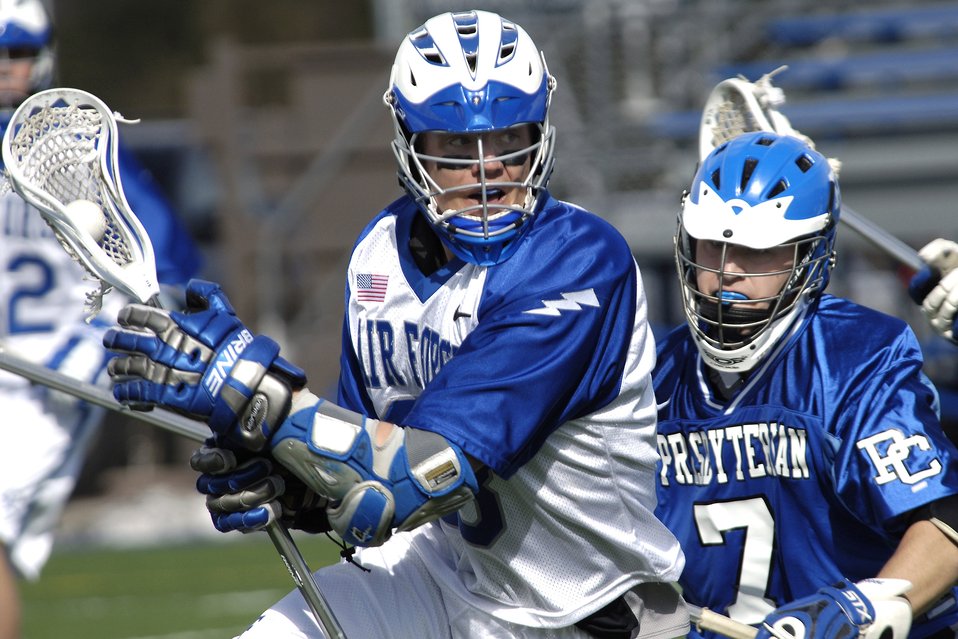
Falcons pick up 12-4 victory over Presbyterian

Air Force Academy senior Jack Parchman works towards the goal during third period lacrosse action, adding a score as Air Force defeated Presbyterian College 12-4 March 25 at the Cadet Lacrosse Stadium in Colorado Springs, Colo. The Falcons, undefeated at home, move to 2-4 on the season.